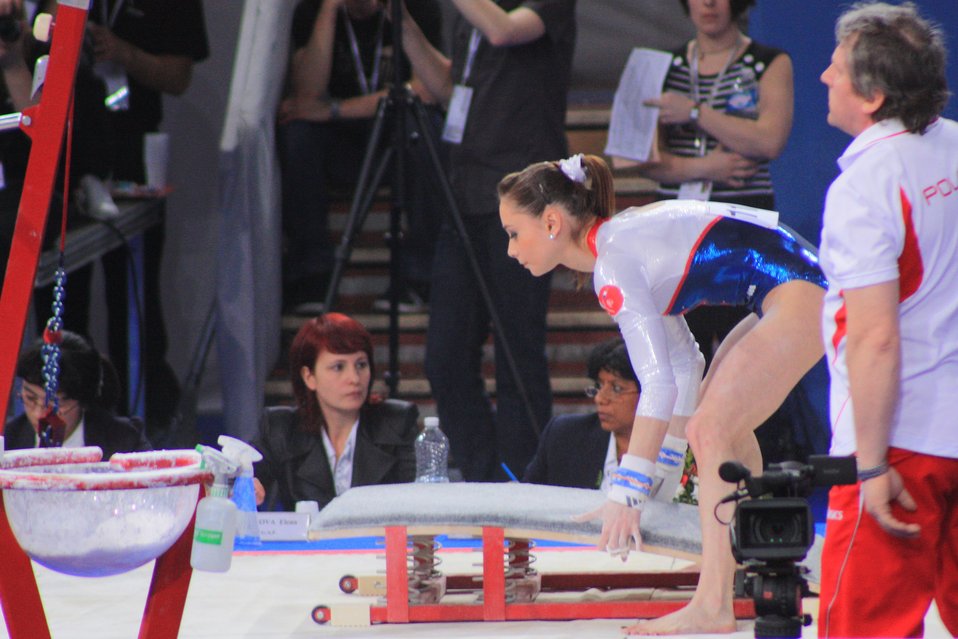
Pauline Morel installing a springboard before the qualifications of uneven bars at the 17th Internationaux de France (2010).